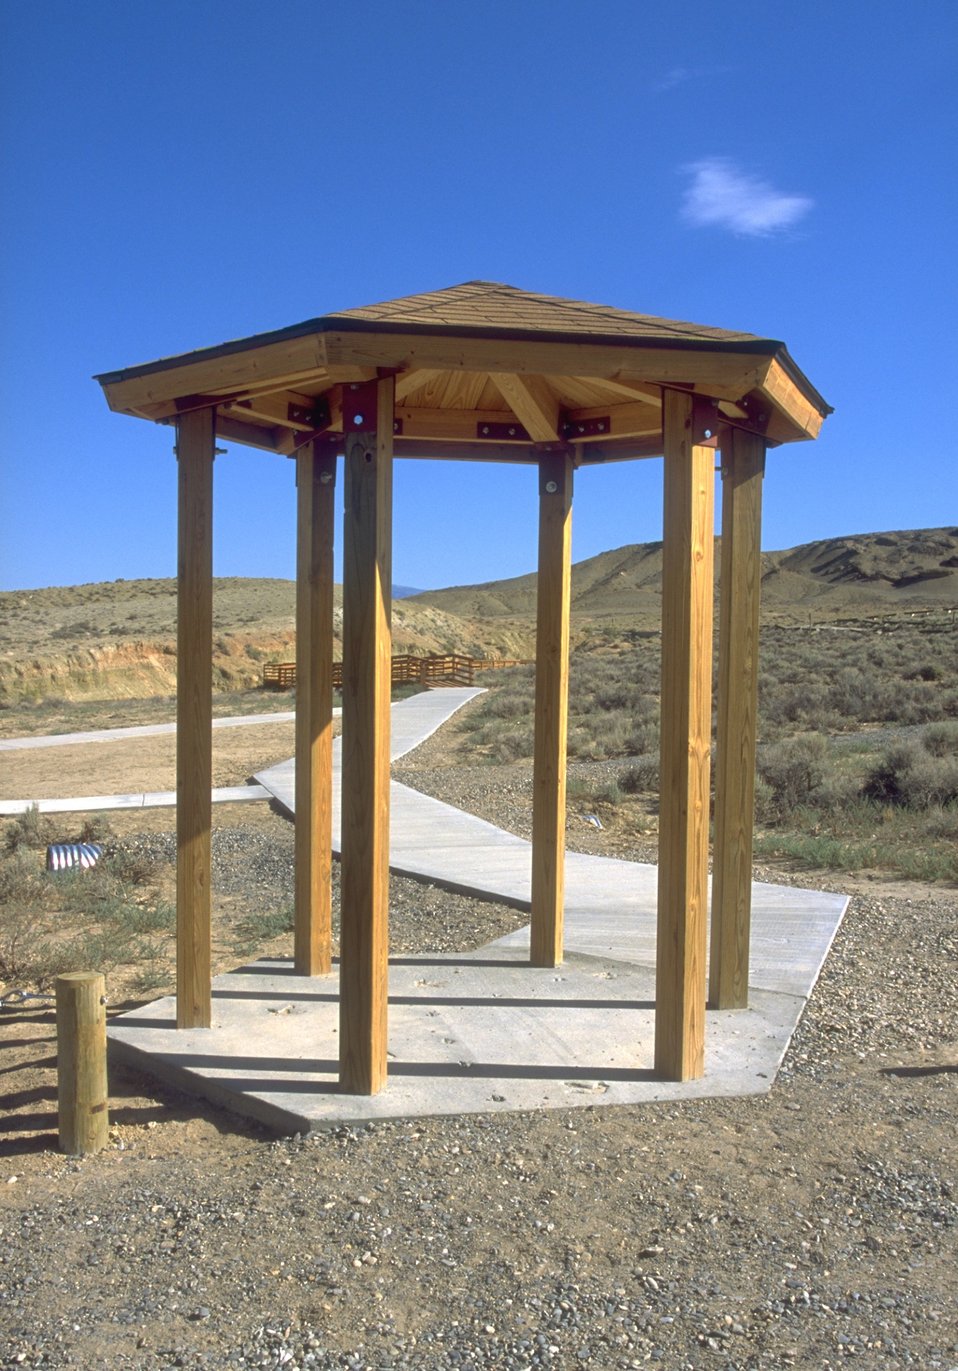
Red Gulch Dinosaur Tracksite showing some of the developed facilities, along Red Gulch/Alkali Back Country Byway, Worland Field Office.